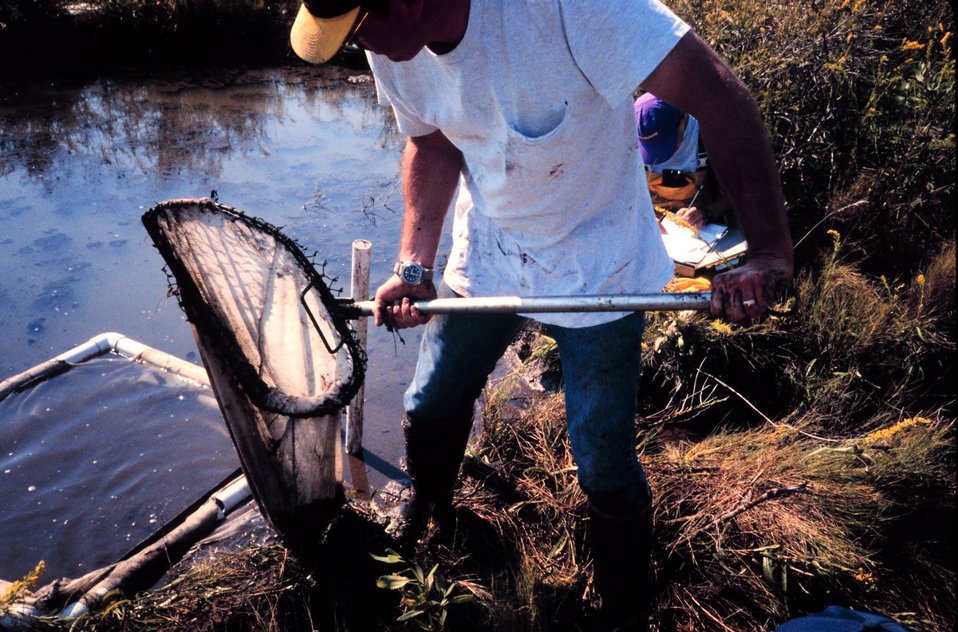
Dave Meyer conducts a throw trap sample of high marsh tide pools on the remnant islands of the Poplar Island archipelago. The collection will help to determine the types and number of small fish and invertebrates that use the tide pools. The collection was looking to determine which species exist in the tide pools where there is no threat from predation.